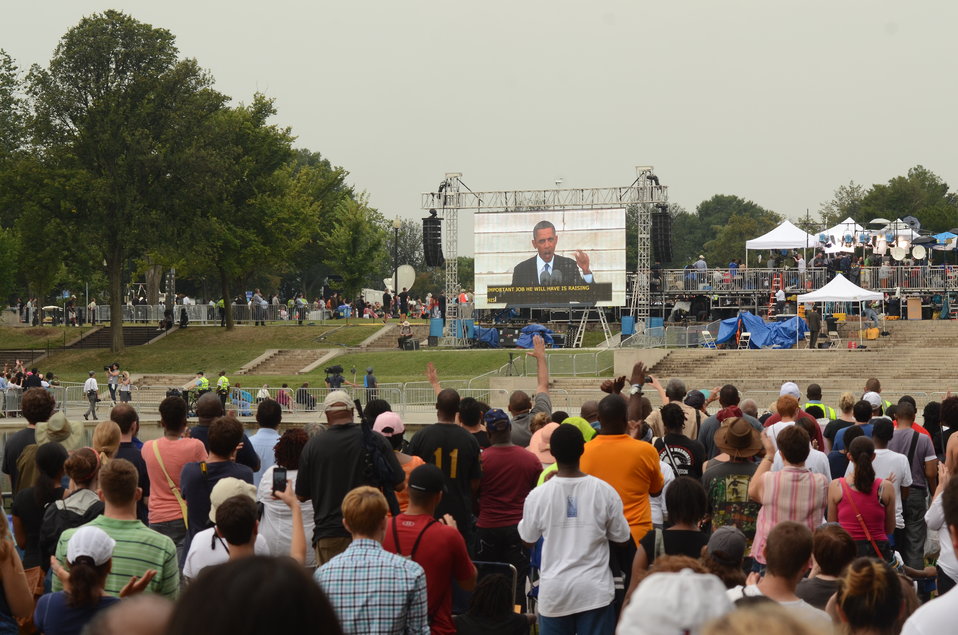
President Barack Obama speaks to marchers at the Lincoln Memorial for the March on Washington, D.C., on Wed., Aug. 28, 2013.